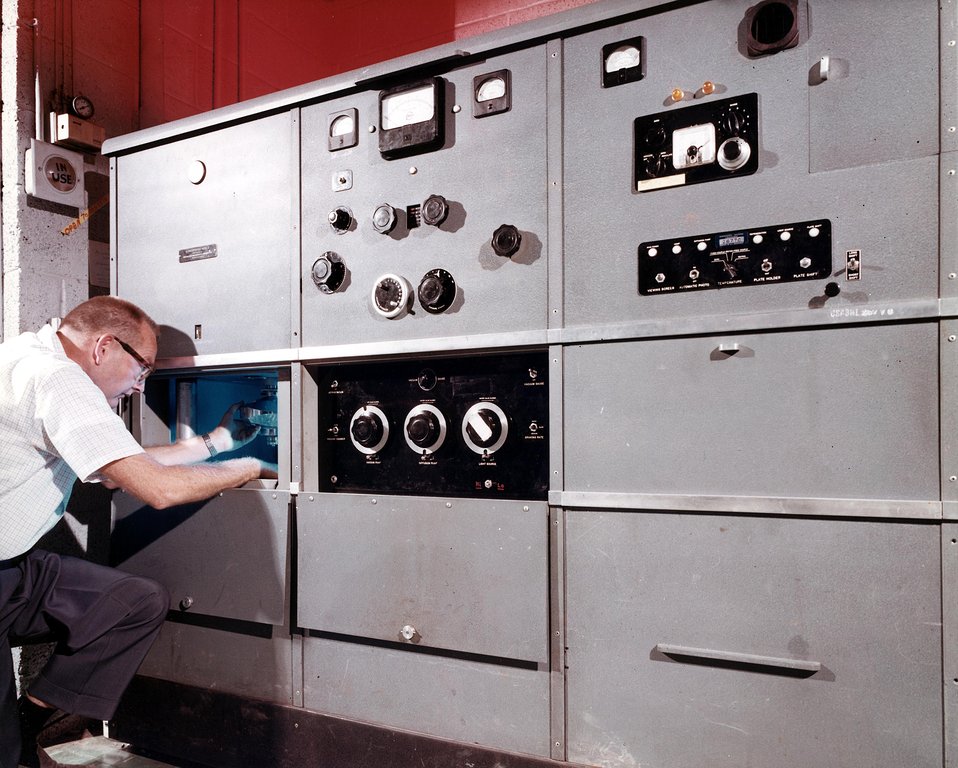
The size of protein molecules is of great interest to biochemists. An estimation can be made in the analytical ultra centrifuge by
observing the rate of sedimentation of a pure protein.